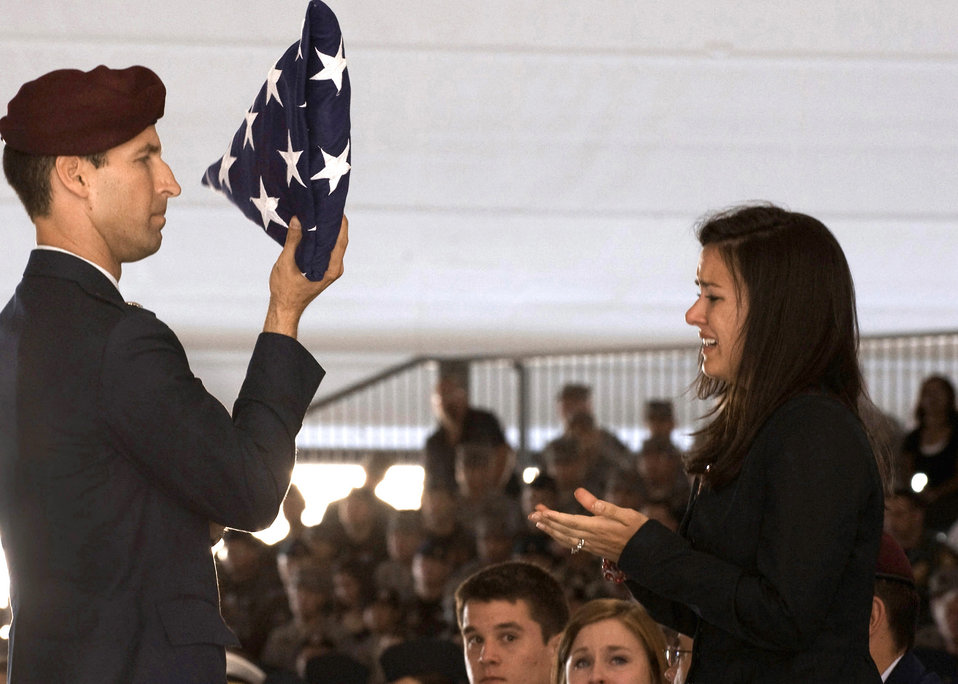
Nellis Airmen honor fallen comrades

Lt. Col. Andrew Reisenweber hands a flag to Mrs. Kathryn Gentz, wife of 1st Lt. Joel Gentz, during a memorial ceremony June 18, 2010, at Nellis Air Force Base, Nev. Colonel Reisenweber is the commander for the 58th Rescue Squadron.